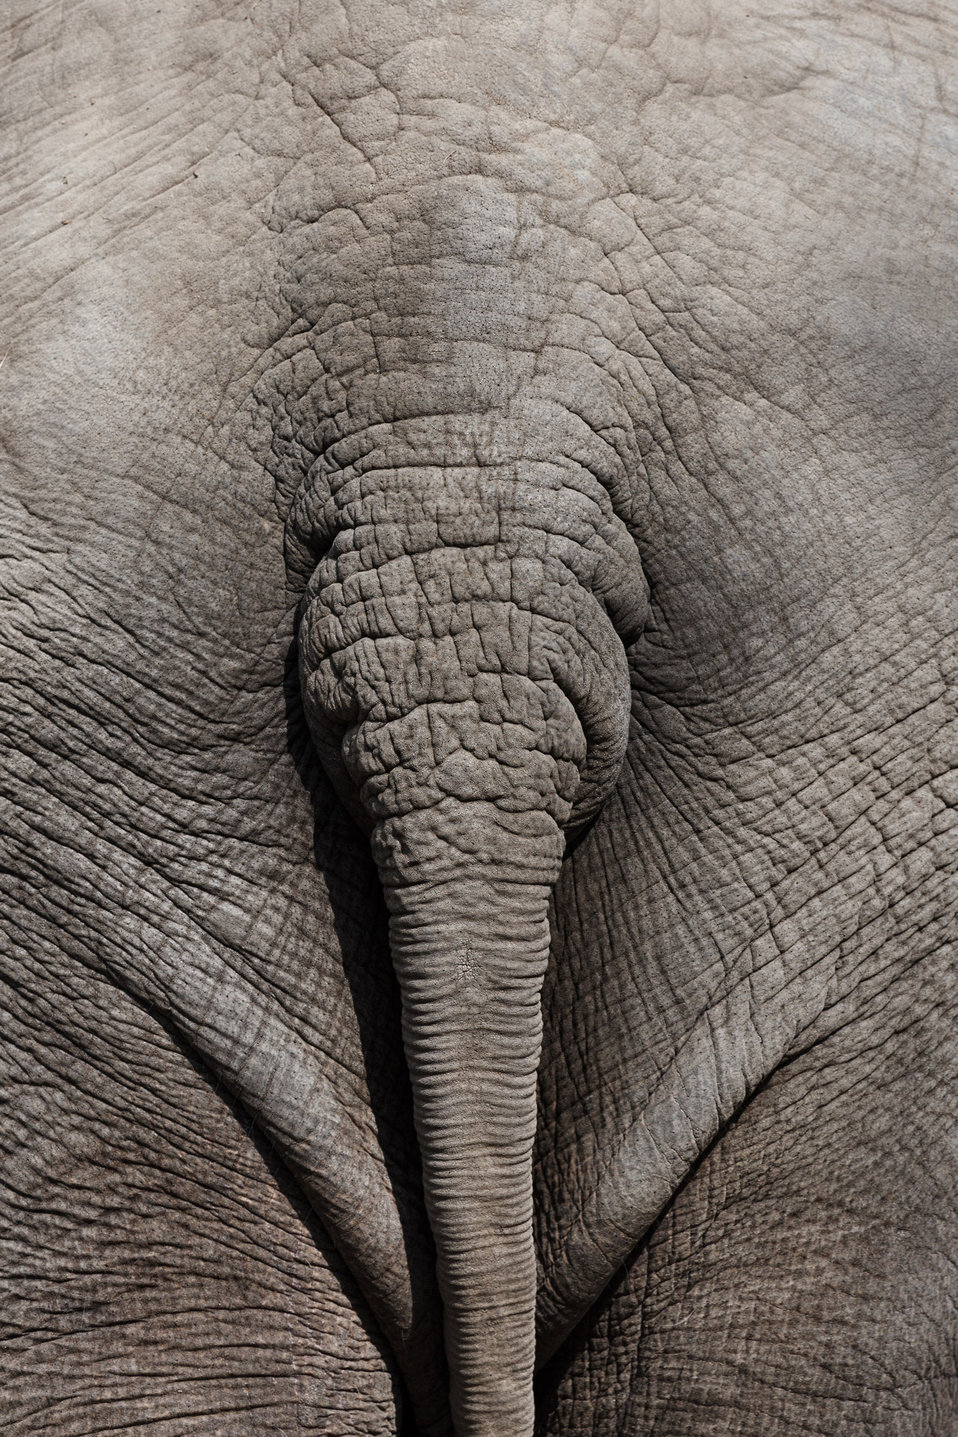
Tail of an elephant

Detail view of a tail of an elephant.